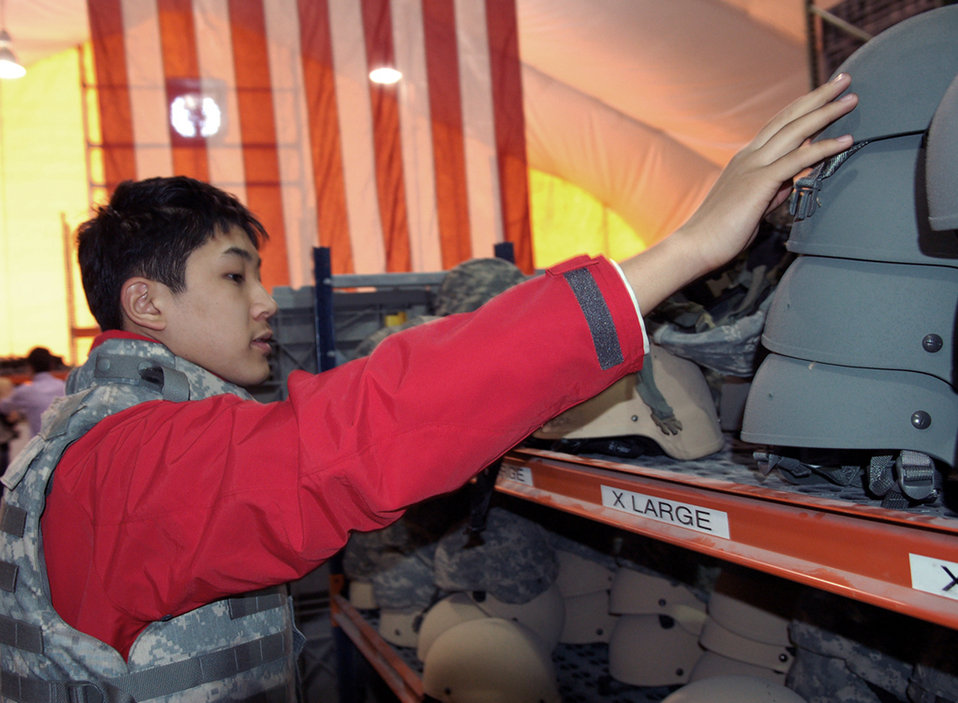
Kyrgyz students get insiders' glimpse of Manas mission

Kairat Ernistof checks out a combat helmet while visiting the Expeditionary Theater Distribution Center March 26 at Manas Air Base, Kyrgyzstan. Mr. Ernistof, a student at the American University of Central Asia, visited Manas AB with 12 other students and faculty for an orientation tour and dinner hosted by the 376th Air Expeditionary Wing Public Affairs Office.